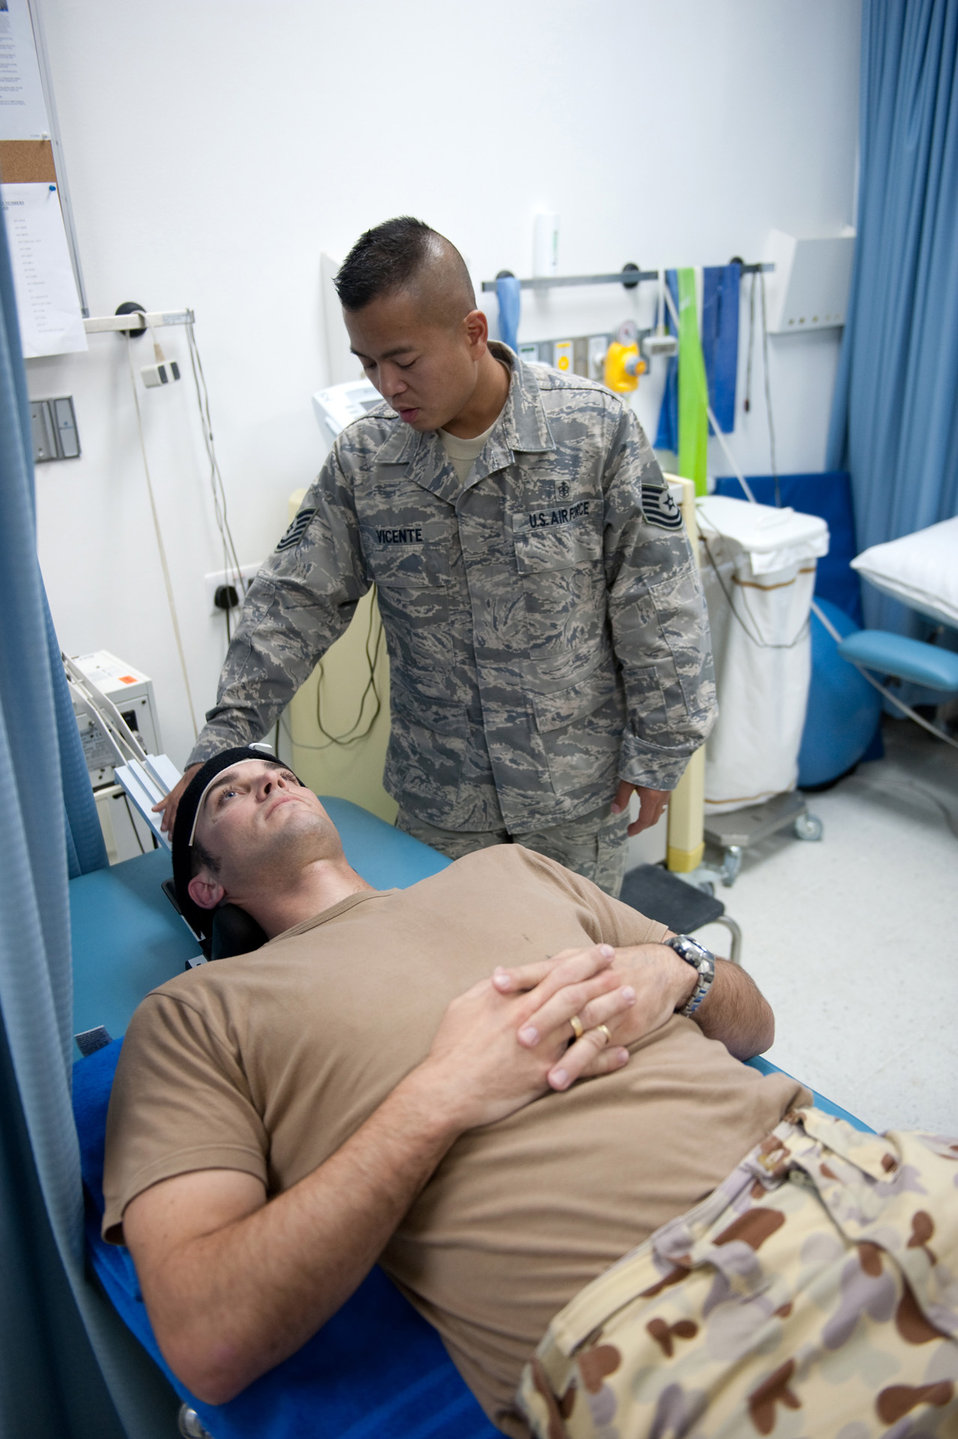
Physical therapists keep servicemembers in the fight

Tech. Sgt. Martin Vicente performs intermittent cervical traction on Royal Australian Air Force Cpl. Adam Henry July 28 at an air base in Southwest Asia. Physical therapists help all servicemembers and coalition partners deployed to the U.S. Central Command area of responsibility who are in need of rehabilitative care. Sergeant Vicente is a 379th Expeditionary Medical Group physical therapy craftsman and deployed from Hickam Air Force Base, Hawaii. He is a native of Manila, Philippines.